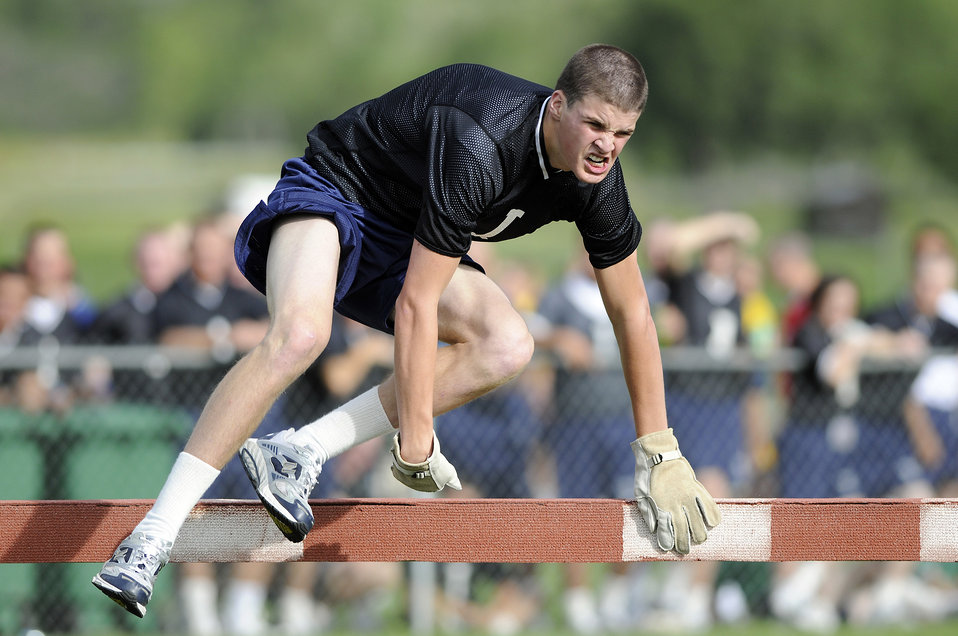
Class of 2013 Field Day

Basic cadet trainees with the U.S. Air Force Academy's Class of 2013 participate in the steeple chase during Field Day activities here today. About 1,344 trainees competed in various athletic events during Field Day, including tug
of war, log relays, steeple chase and sprint relays. Basic cadet training started June 25 and continues through Aug. 1. The new cadets are in their first month of training and are learning about Air Force heritage, honor, discipline and Air Force core values, in addition to improving physical
fitness. The fall academic semester begins Aug. 6.